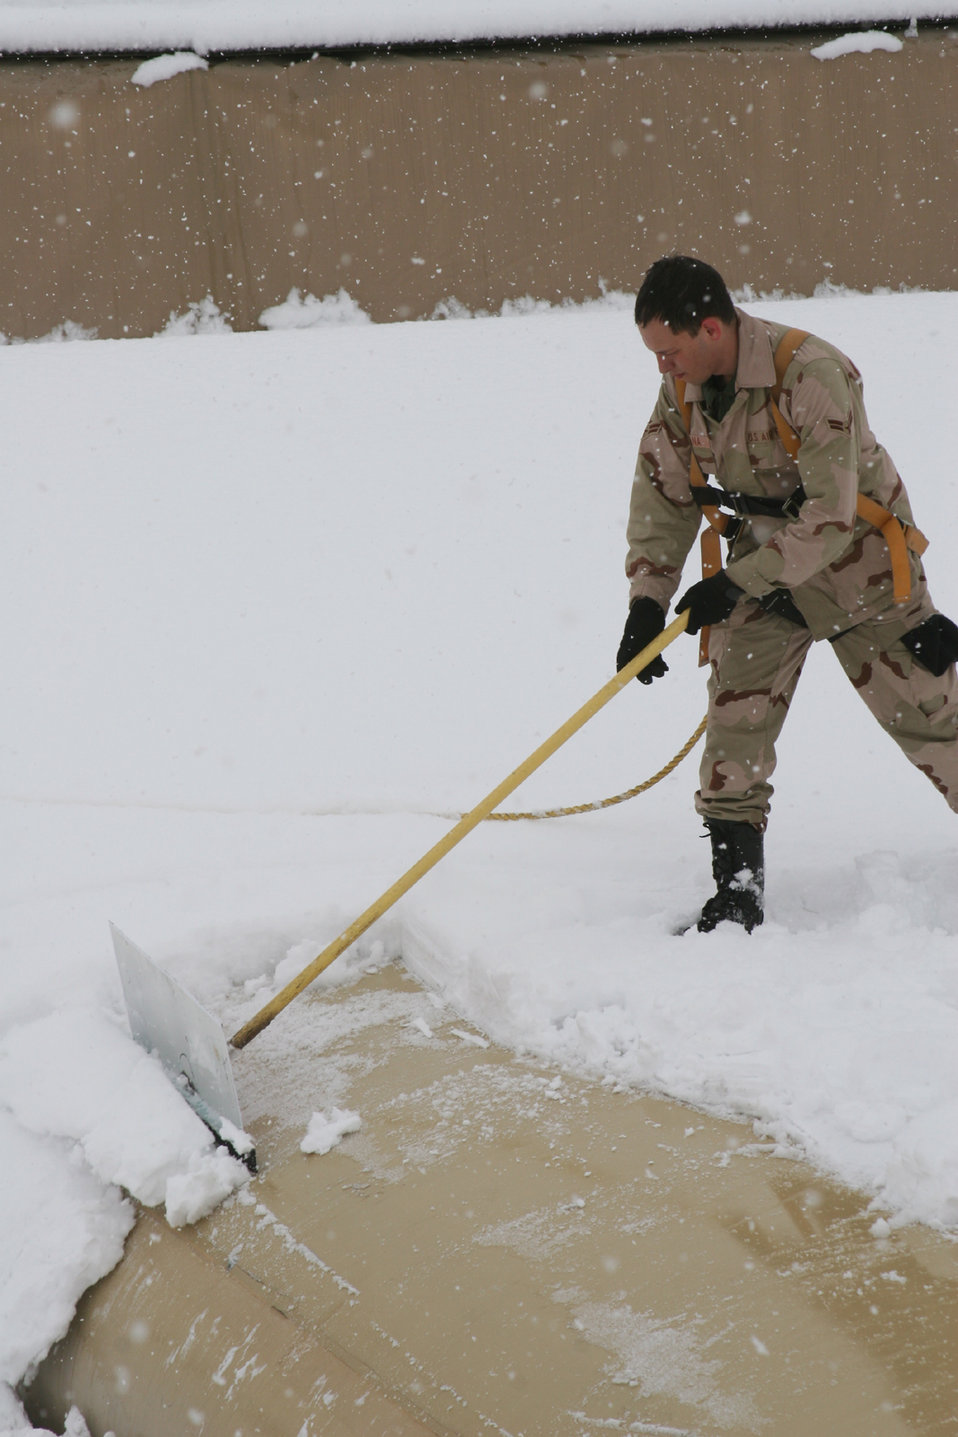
Oh snowy day

MANAS AIR BASE, Kyrgyzstan -- Airman 1st Class Pedro Polina removes quickly accumulating snow from a fuel bladder vital to the aerial refueling mission here. The base received five inches of snow in two days. Airmen here were not fazed; they launched more than 22 sorties, handling more than 1,500 passengers. Airman Polina is assigned to the 376th Expeditionary Logistics Readiness Squadron.